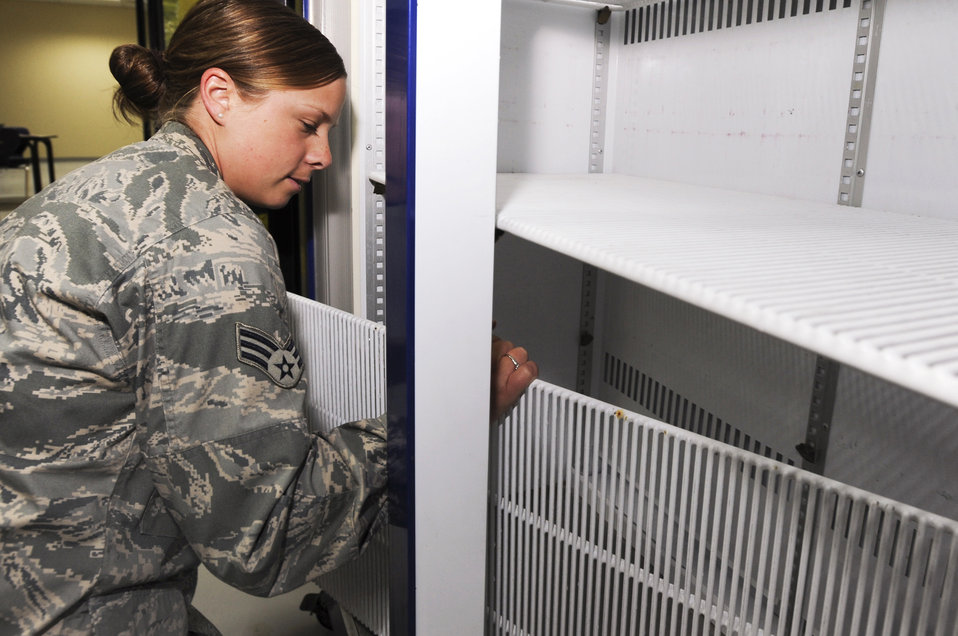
Feeding the force

Senior Airman Mandy Woodard sets up a beverage refrigerator in the new Coalition Compound Dining Facility in preparation for the grand opening March 23 at an air base in Southwest Asia. Airman Woodard is moving equipment to the new dining facility while still having to complete their regular duties at their own work place. Airman Woodard is a services journeyman with the 379th Expeditionary Force Support Squadron. She hails from Stark, N.H., and is deployed from Pease Air National Guard Base, N.H.